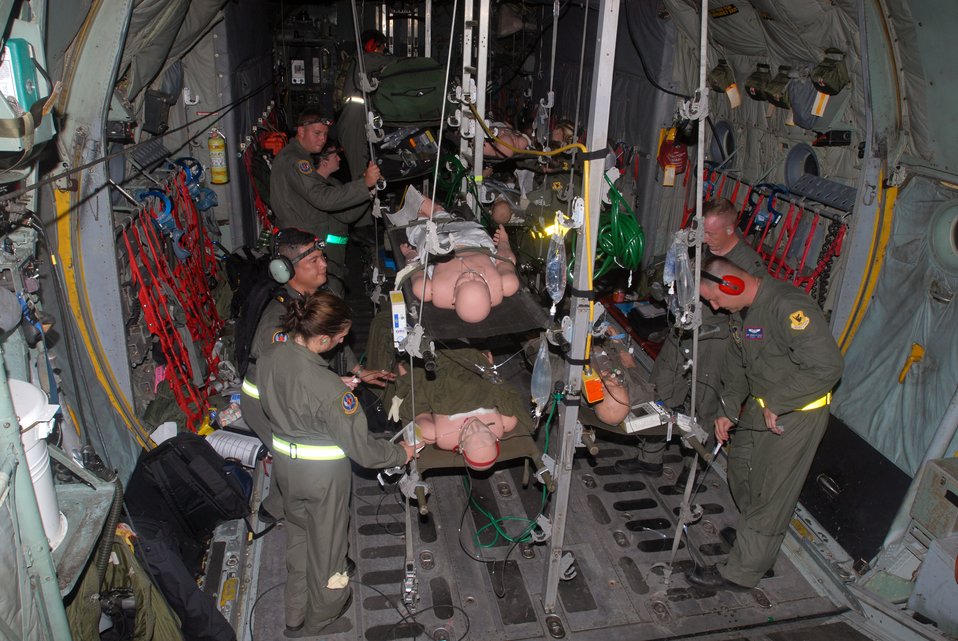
Casualty exercise

Airmen from the 18th Aeromedical Evacuation Squadron on board a C-130 Hercules care for a simulated patient during an exercise Aug. 29. The exercise partnered seven Air Force squadrons in a land, sea and air training operation involving search and rescue, mass casualty triage, medical patient loading and transport.